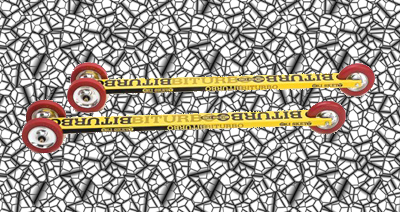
Italiano: Skiroll per Tecnica Classica a 3 ruote